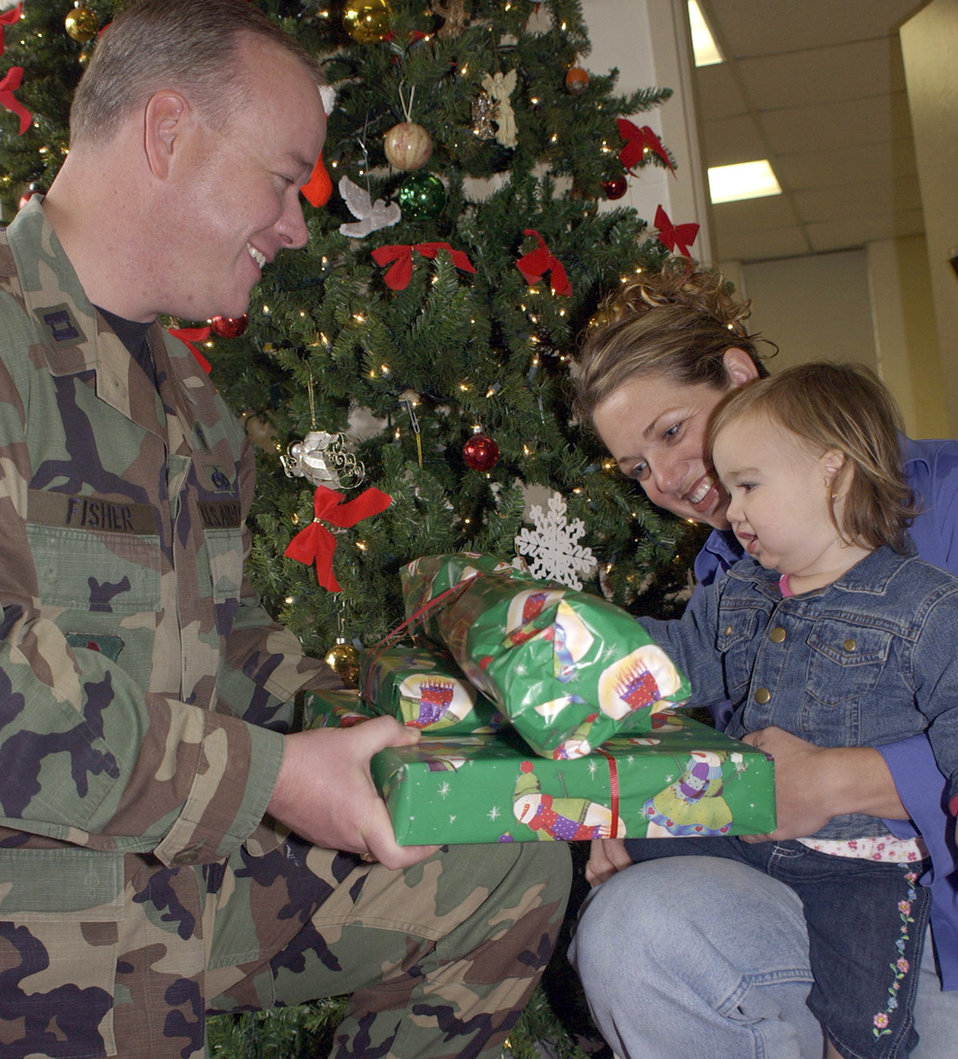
Toys roll in from Laughlin, Hurlburt Field

KEESLER AIR FORCE BASE, Miss. -- Chaplain (Capt.) Ken Fisher, left, gives Master Sgt. Nicole Pearson and her 1-year-old daughter, Olivia, a present. Captain Fisher is with the 47th Flying Training Wing. Sergeant Pearson is with the 81st Surgical Operations Squadron.